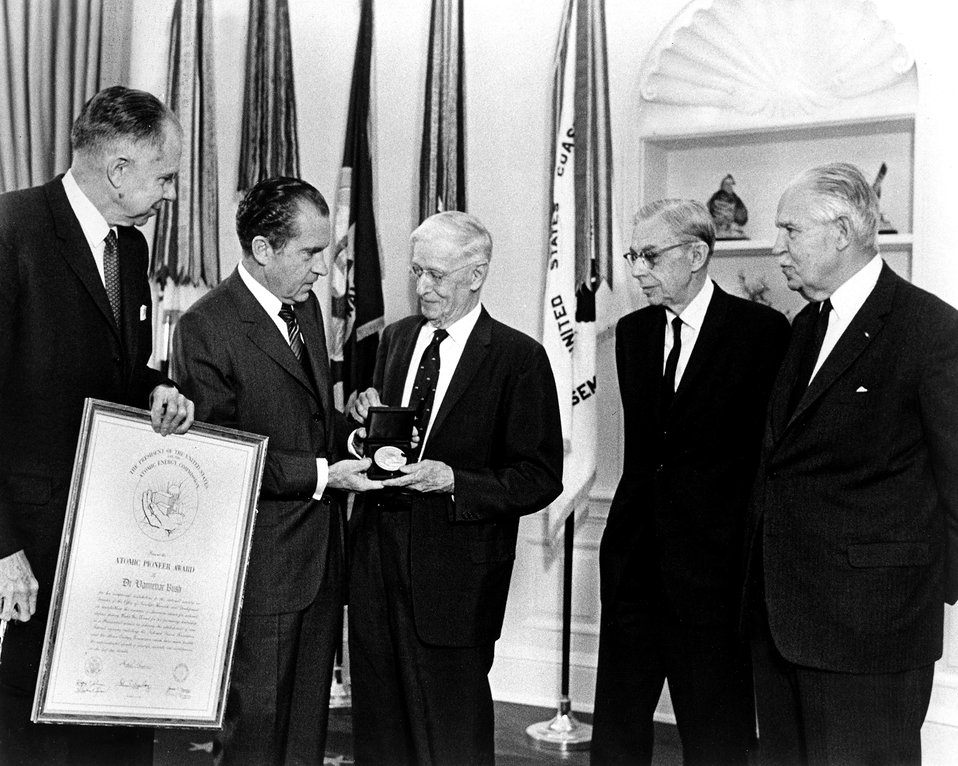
Three men who played a major role during World War II and subsequent government support of scientific research each received a unique Atomic Pioneers Award from President Nixon in a White House Ceremony, Feb 27, 1970. Left-to-right: Dr. Glenn T. Seaborg, AEC Chairman; President Nixon; and the three award winners -- Dr. Vannevar Bush, Dr. James B. Conant, and Lt. Gen. Leslie R. Groves.